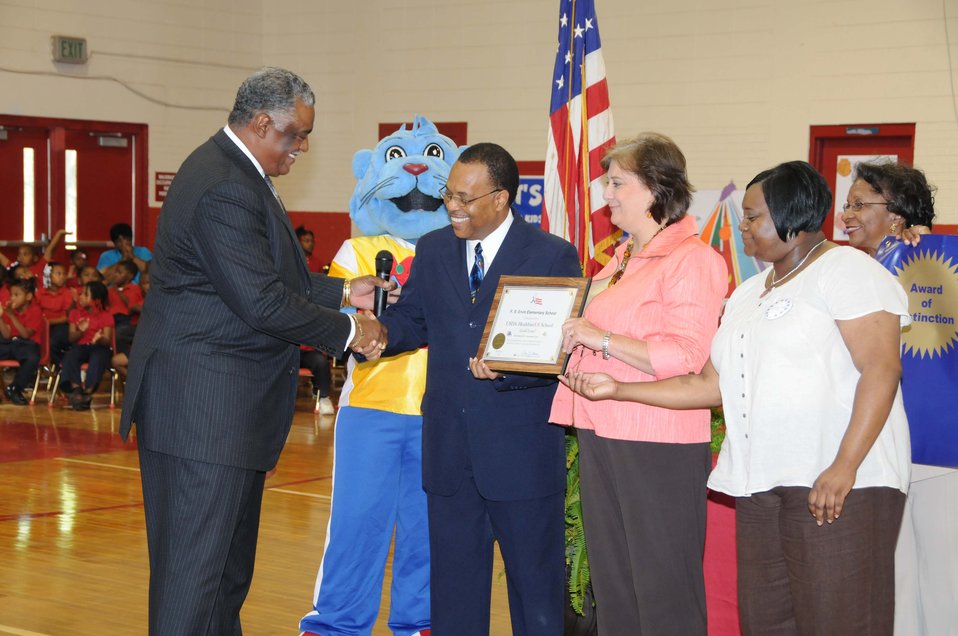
Award1

Southeast Regional Administrator Don Arnette awards F.S. Ervin Elementary School in Pine Hill, Ala., with the HealthierUS School Challenge a Gold Award of Distinction